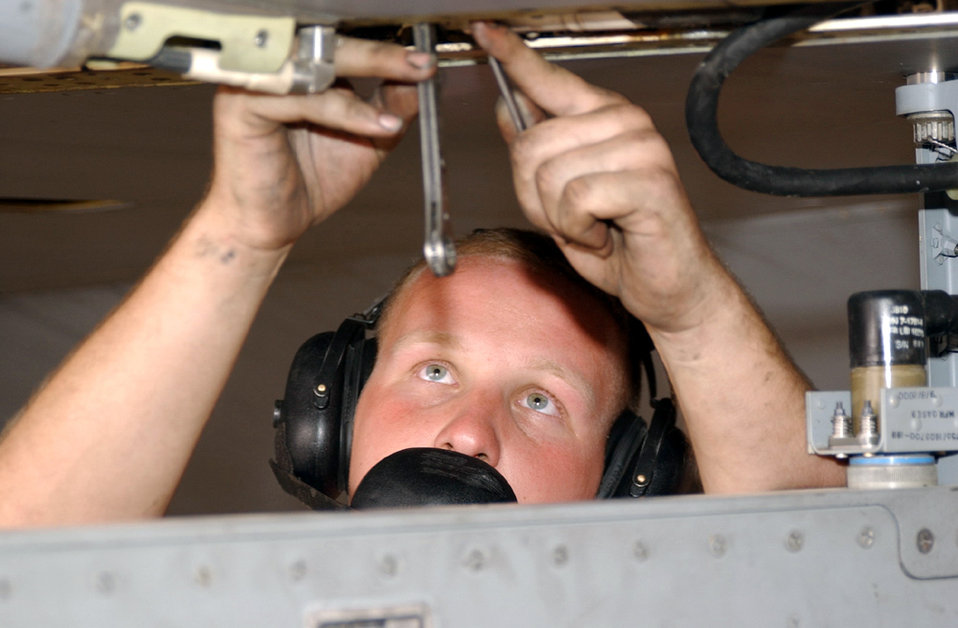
Flaperon adjustment

OPERATION IRAQI FREEDOM -- Airman 1st Class Michael Magner adjusts the leading edge flaperon during a rig and operations check on an F-16 Fighting Falcon. Magner is assigned to the 363rd Expeditionary Aircraft Maintenance Squadron and is deployed from Misawa Air Base, Japan.